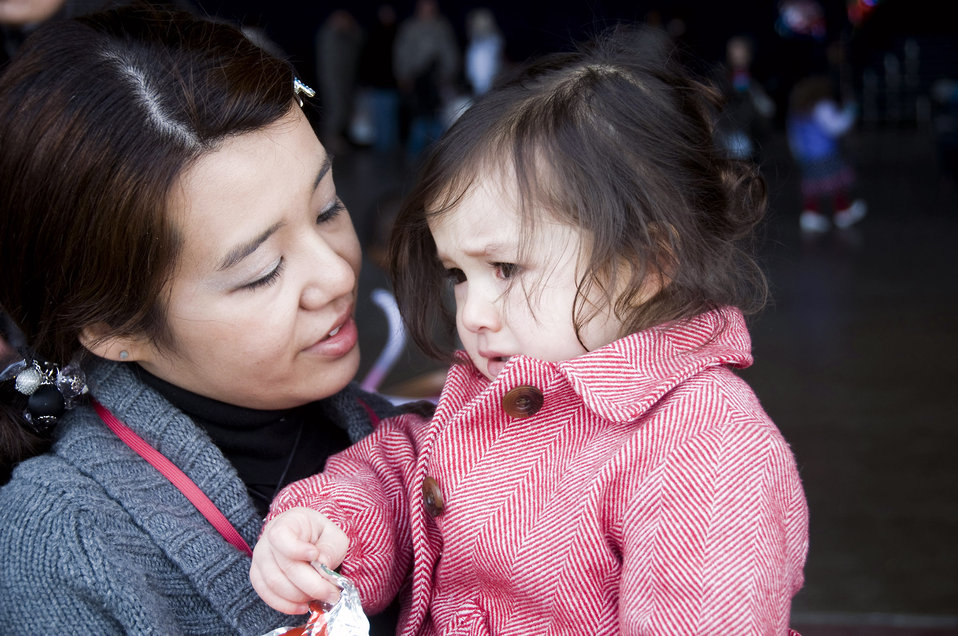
Misawa officials welcome home 300 deployed Airmen

Nao Kauffman calms her daughter, Abby, while waiting for Tech. Sgt. Andrew Kauffman to arrive home from a six-month deployment March 1 at Misawa Air Base, Japan. Hundreds of family members gathered to greet about 300 Airmen returning from a deployment to Joint Base Balad, Iraq. Sergeant Kauffman is assigned to the 35th Aircraft Maintenance Squadron.